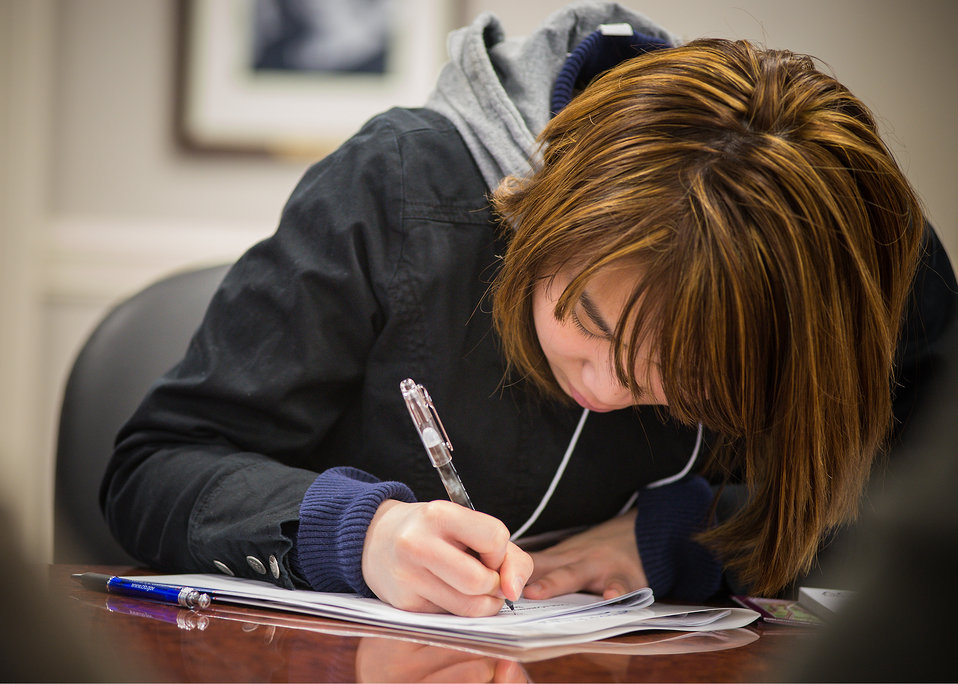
Thai Li, a student from Thomas Jefferson High School of Science and Technology in Alexandria, VA. takes notes during the U.S. Department of Agriculture (USDA), Office of the Chief Information Officer (OCIO) IT Job Shadow Day, Tuesday, Mar. 25, 2014. The OCIO IT Job Shadow Day hosts students from local high schools in the Washington, D.C. area annually with IT professionals and agricultural specialists from a variety of mission areas at USDA.